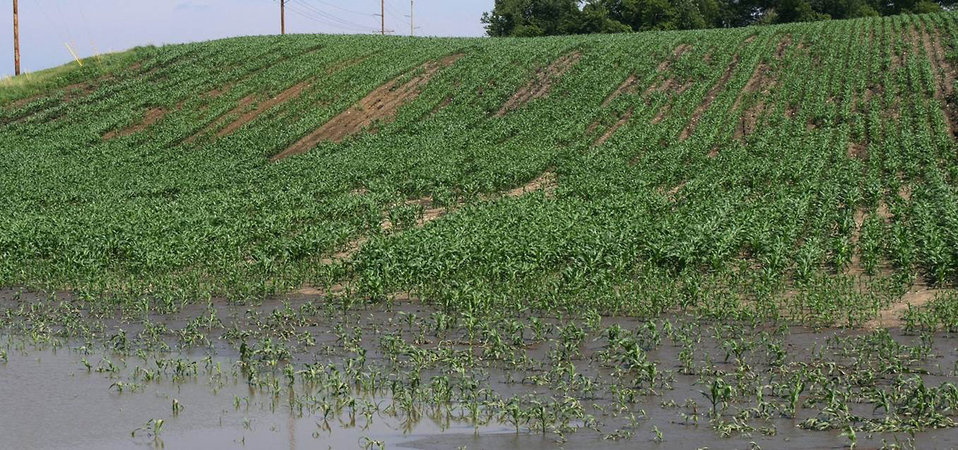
Erosion

These two farms have the same soils, same crops and same precipitation. This farm has erosion issues which conservation practices could address.